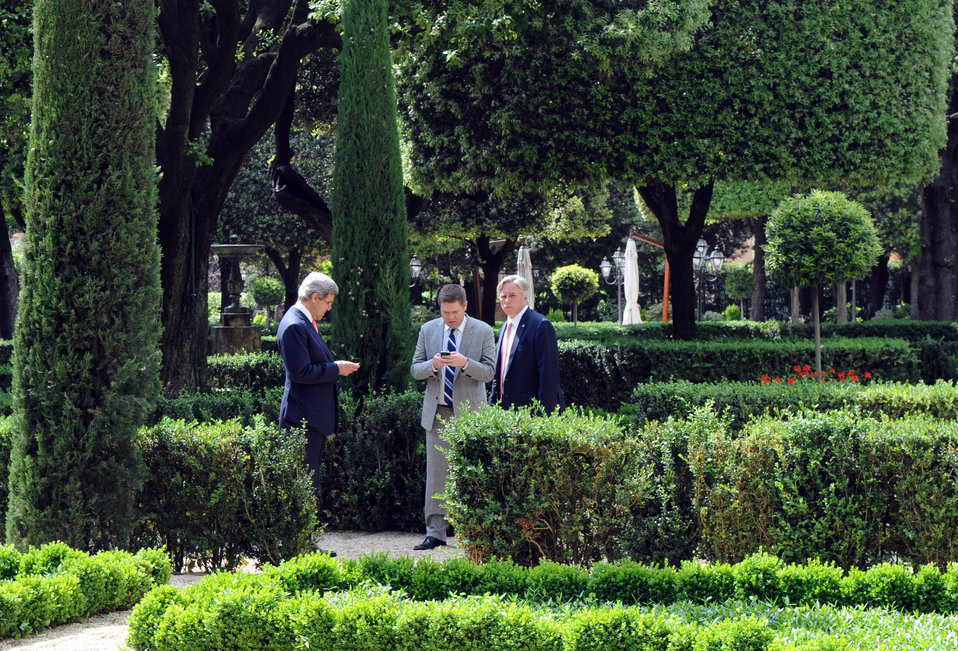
Secretary Kerry, Chief of Staff Wade, and Ambassador Thorne Work

U.S. Secretary of State John Kerry, joined by Chief of Staff David Wade and U.S. Ambassador to Italy David Thorne, work outside the Villa Taverna, the U.S. ambassador's residence in Rome, Italy, on May 9, 2013.